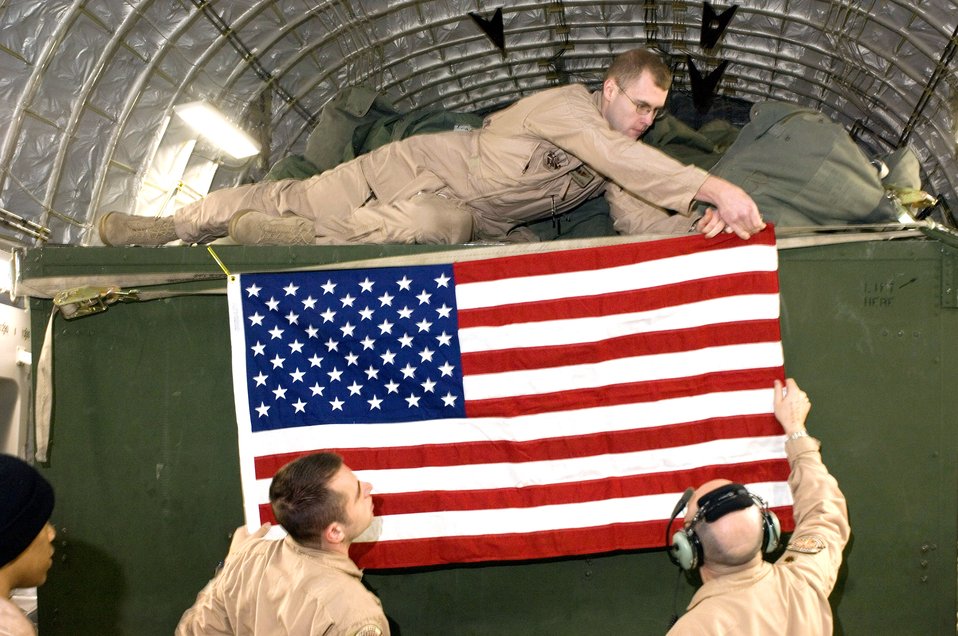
Air care

RAMSTEIN AIR BASE, Germany (AFPN) -- (Clockwise from top) Senior Airman Christian Adams, Maj. David Ball and Senior Airman Daniel Wood hang the American flag inside a C-17A Globemaster III. The Airmen are assigned to the 791st Expeditionary Aeromedical Evacuation Squadron. The squadron moves servicemembers from Operations Iraqi and Enduring Freedom to health-care in Germany and the U.S.